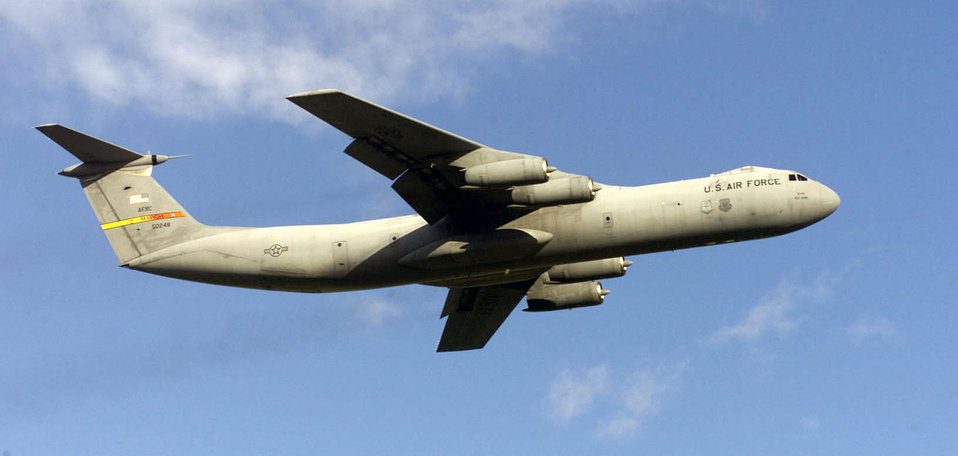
C-141C

Christchurch, New Zealand -- A C-141C Starlifter from the 452nd Air Mobility Wing, March Air Reserve Base, lifts off from Christchurch International Airport in New Zealand.